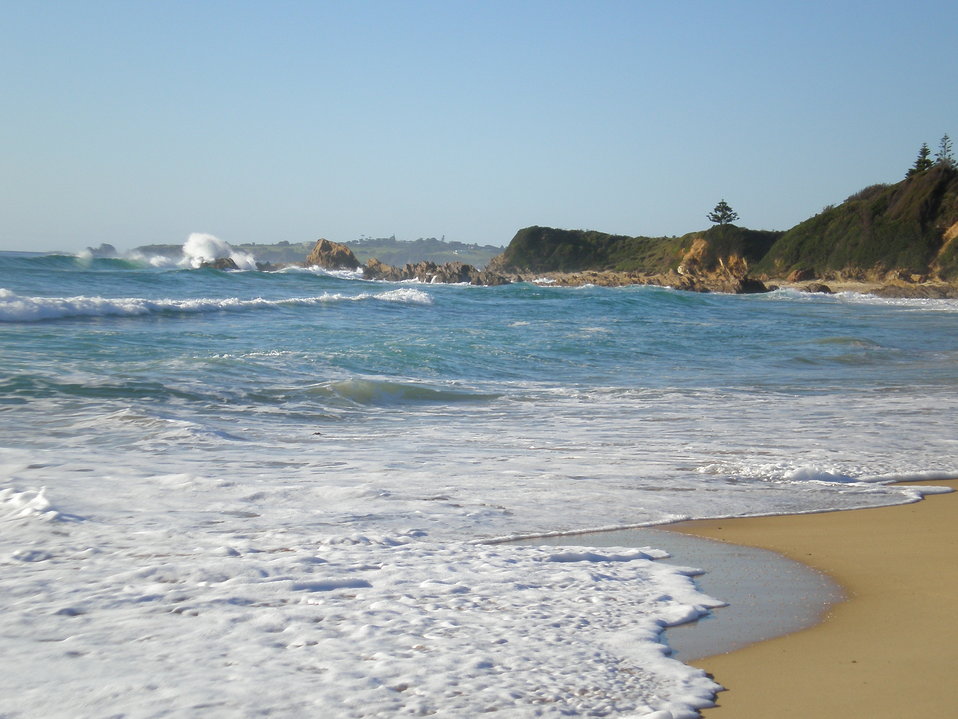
Yabbarra Beach in Dalmeny on the south coast of New South Wales